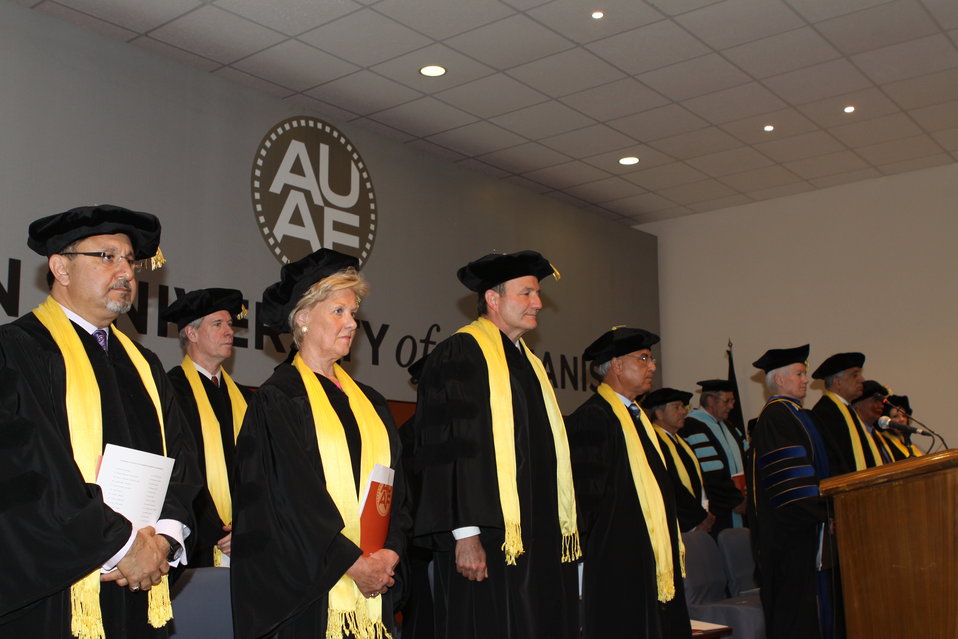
100526 AUAF Graduation 143